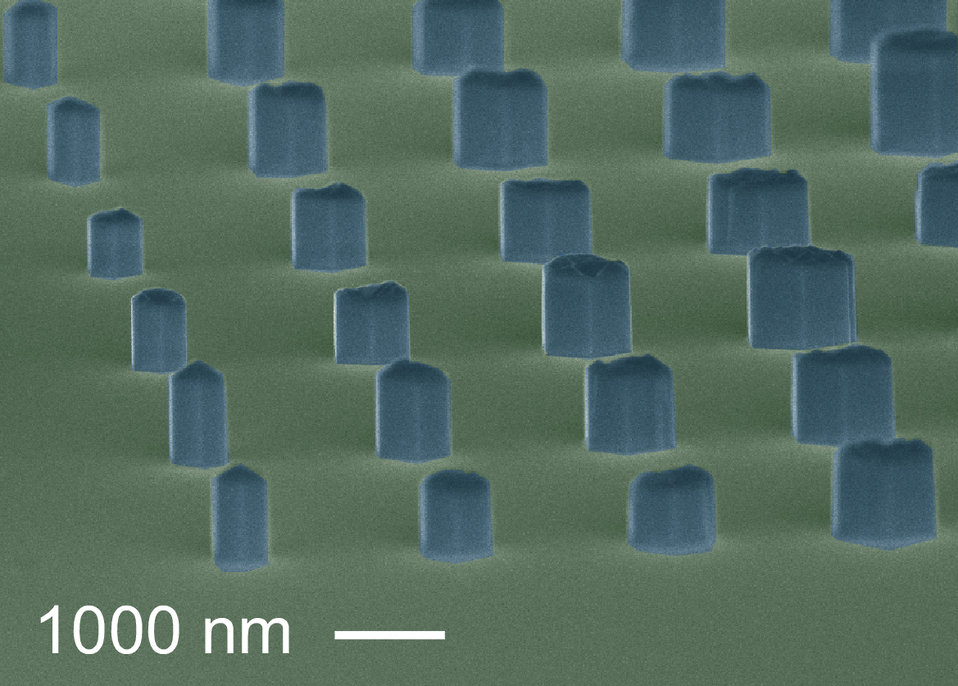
Nanowires

Colorized micrograph of semiconductor nanowires grown at NIST in a precisely controlled array of sizes and locations.